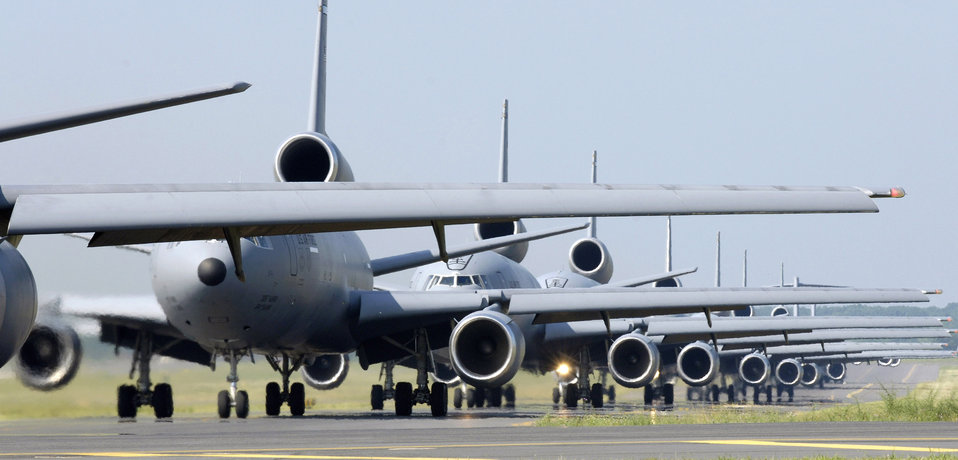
Elephant Walk

KC-10 Extenders and C-17 Globemaster IIIs from McGuire Air Force Base, N.J., taxi down the flightline during the emergency response exercise Elephant Walk. This is the first time C-17s and KC-10s have been paired in an exercise. Sixteen aircraft launched from McGuire on Friday, June 30, as part of the exercise.